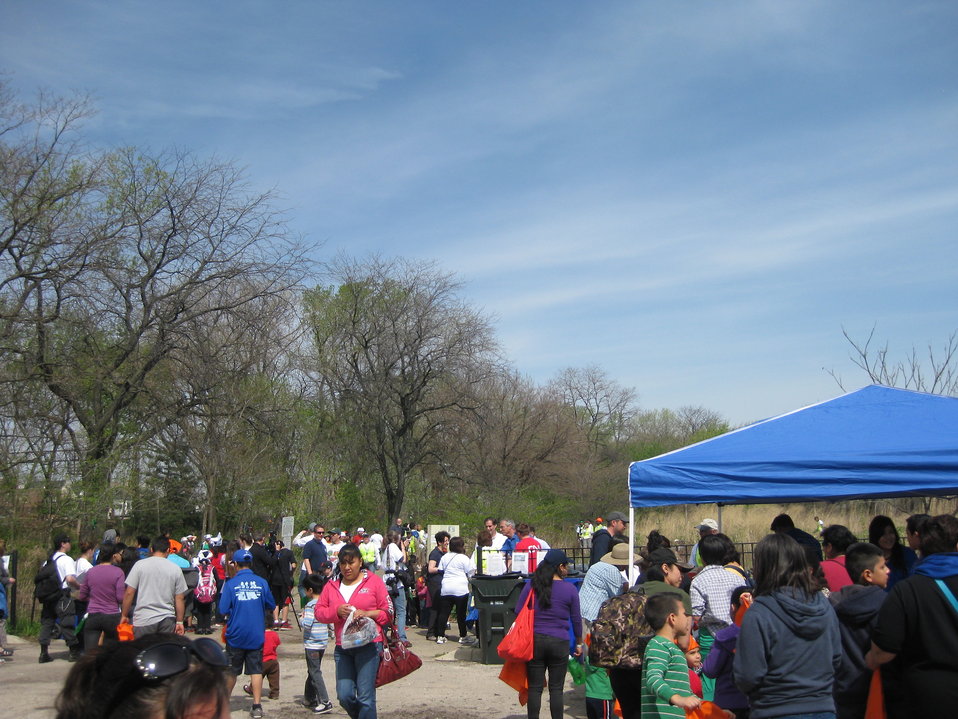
Community tree planting day Chicago May 10 2014

Chicago Park District Burnham Corridor Community Planting Day
May 10, 2014
Photo by USFWS; Louise Clemency